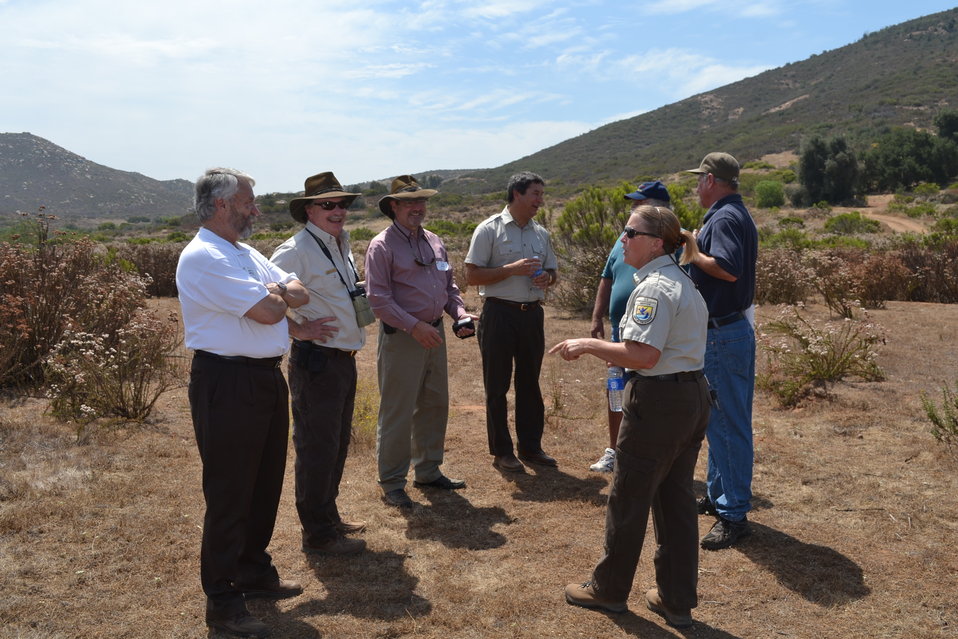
Hidden Valley Ribbon Cutting

(USFWS)